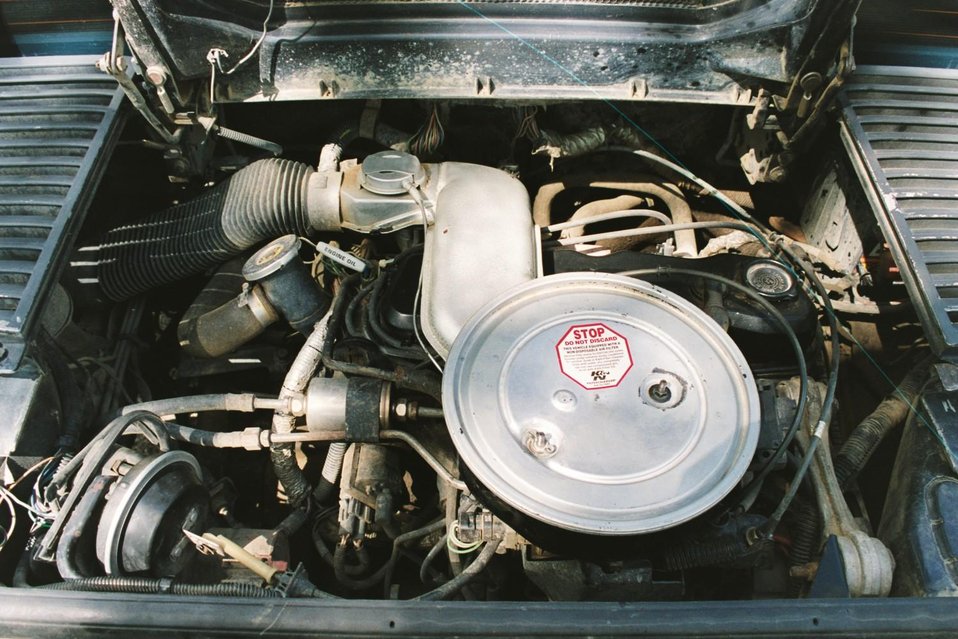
This is the 2.5L Pontiac Engine in my 1985 Pontiac Fiero. Anyone may use this image.